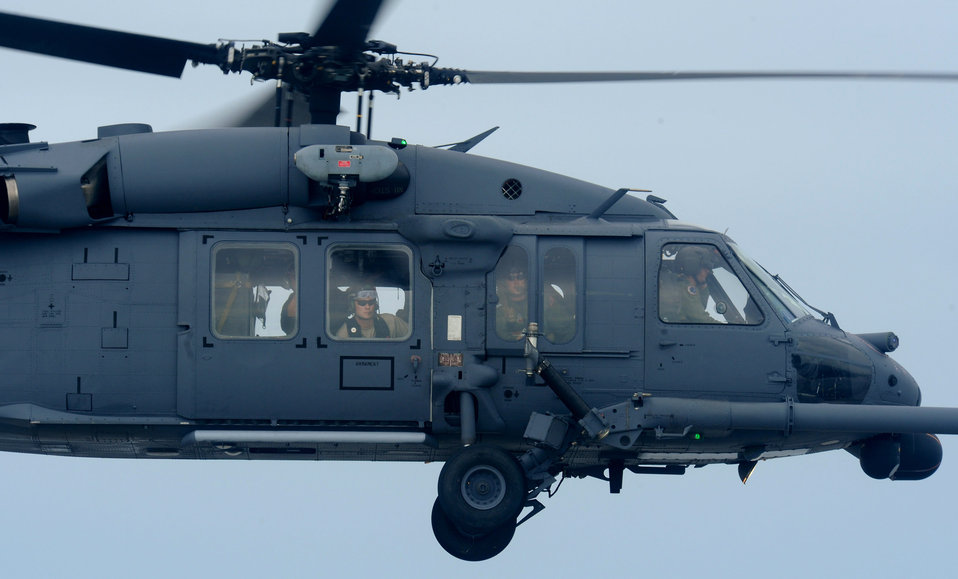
Pave Hawks bring help

Crewmen watch for stranded people Sept. 13 as an HH-60 Pave Hawk assigned to the 331st Air Expeditionary Group conducts search and rescue operations over Galveston, Texas, Sept. 13. in the aftermath of Hurricane Ike.